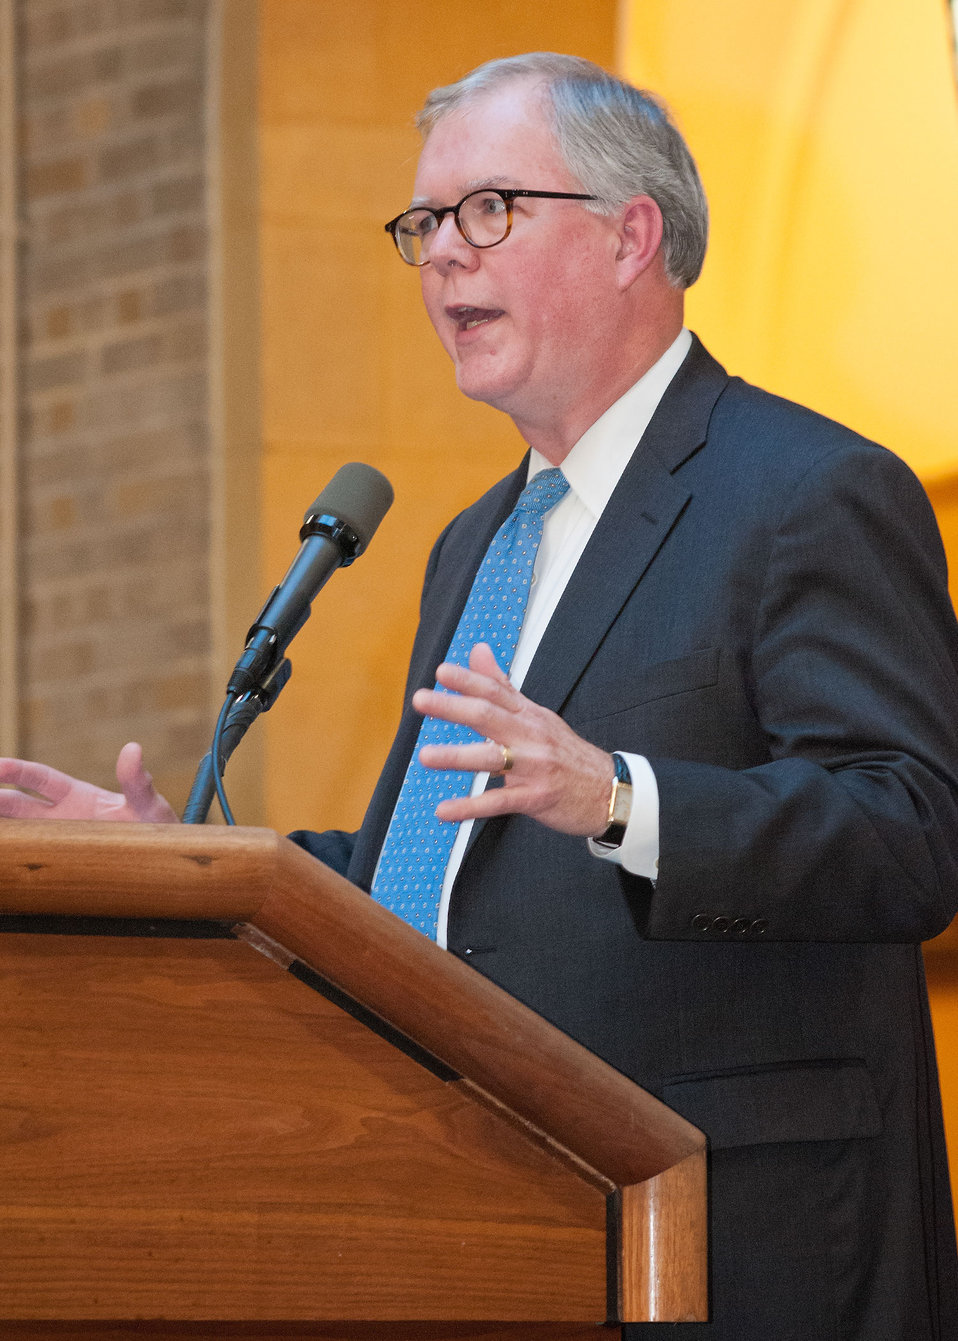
David Brown, Executive Vice President, National Trust for Historic Preservation spoke of the spiritual, historic and scientific resources at the Chimney Rock National Monument Dedication Celebration held at the United States Department of Agriculture in Washington, D.C., on Monday, Sept. 24, 2012. President Barack Obama designated Chimney Rock in the San Juan National Forest in Southwest Colorado as a national monument on Friday, Sept. 21, 2012. A move that will help preserve 4,726 acres in southwestern Colorado surrounded by the Southern Ute Indian Reservation. The land will be managed by the U.S. Department of Agriculture Forest Service with assistance from local tribes. Chimney Rock was home to the Pueblo People 1,000 years ago and is culturally significant for Native American tribes.